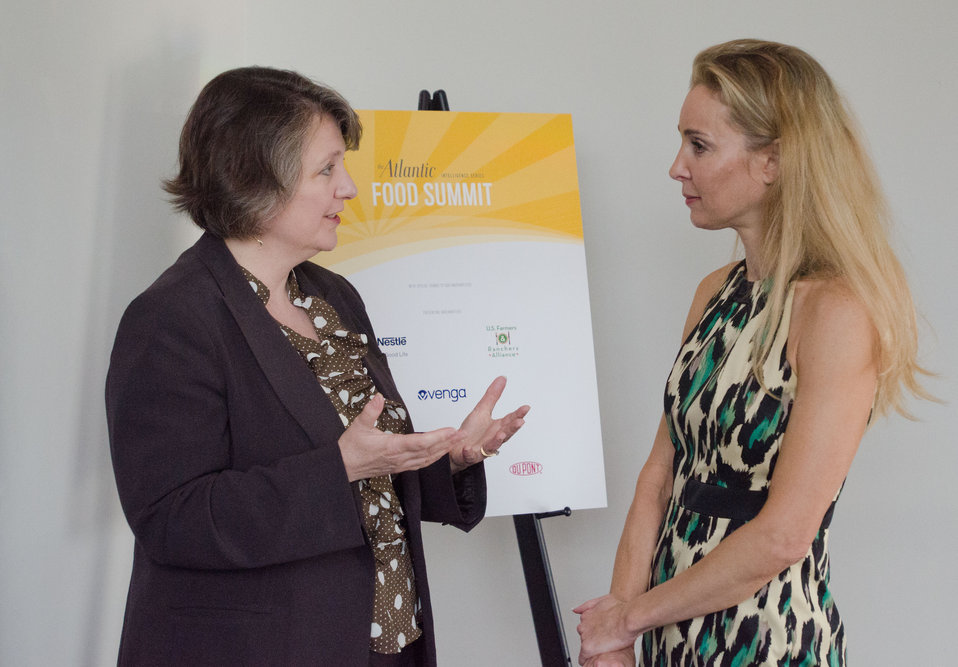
Agriculture Deputy Secretary Kathleen Merrigan and Senior Vice President, Nutrition Group, Dole Jennifer Grossman engage in a more detailed discussion about food nutrition after Deputy Secretary Merrigan's interview by The Atlantic Senior Editor Corby Kummer at the 3rd Annual Food Summit held at the W Hotel in Washington, D.C. on Thursday, May 24, 2012. The Food Summit event includes interviews, panel discussions and symposia with leading authorities on issues related to food, food security, and nutrition. Chef, Restaurateur, Author, and Television Personality Mario Batali and Co-Founder and Chief Innovation Officer, Revolution Foods Kirsten Tobey were some of the headline guests. Some of the panel discussions were held on: Sustainable Agriculture and Feeding a World of 9 Billion, and Learning at a Young Age: Childhood Nutrition and the Obesity Epidemic.